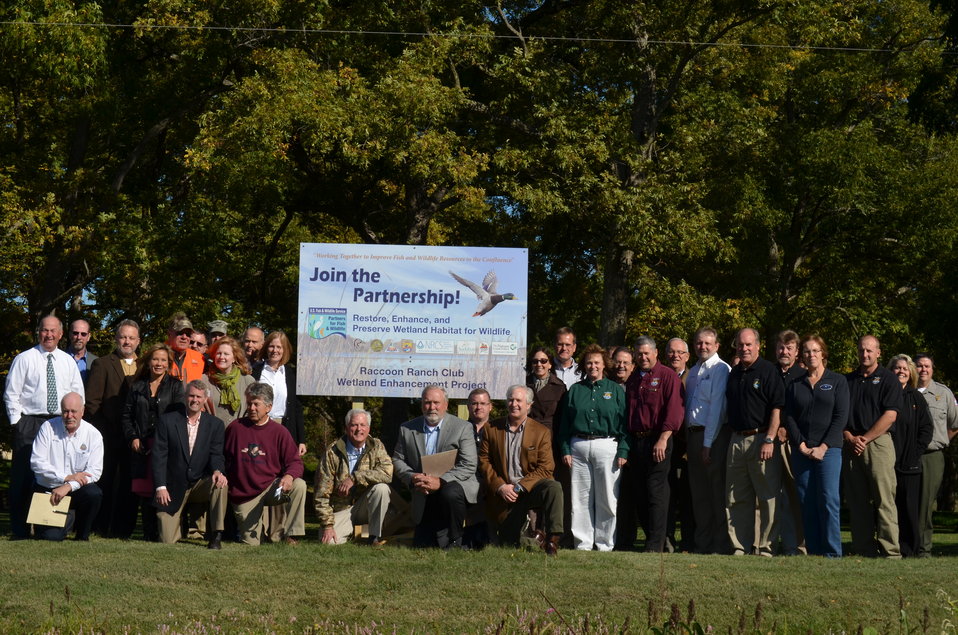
Partners at Raccoon Ranch

The Missouri/Mississippi Rivers Confluence Conservation Partnership at Raccoon Ranch near St. Louis. USFWS/Ashley Spratt